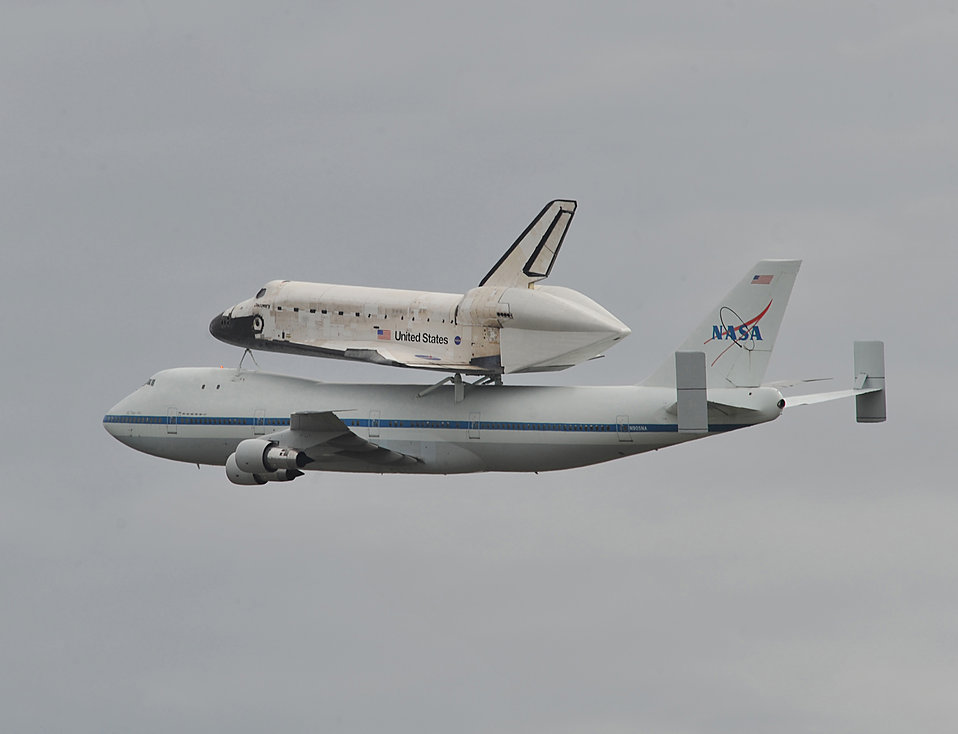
Space shuttle Discovery's last trip

The space shuttle Discovery, sitting on top of a modified NASA Boeing 747 aircraft, flies over Washington Dulles International Airport in Dulles, Va., April 17, 2012. The Discovery made its final voyage to the Smithsonian National Air and Space Museum annex in Virginia.